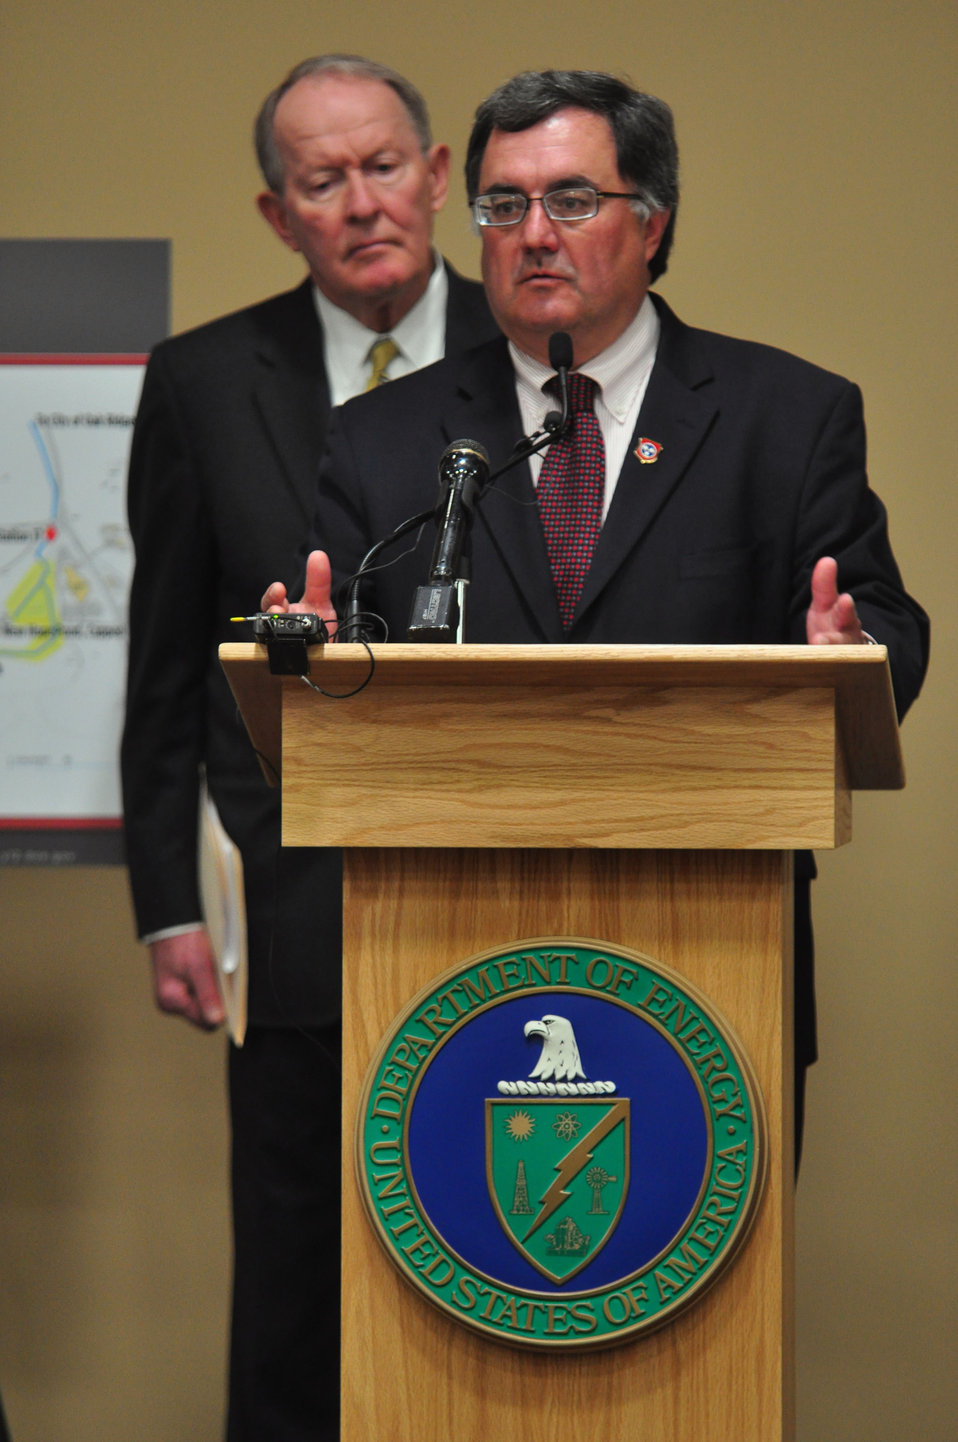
Mercury Cleanup Press Conference Y-12 Oak Ridge Speaking Robert Martineau Tennessee Department of Environment and Conservation Commissioner with U.S. Sen. Lamar Alexander (R-Tenn.) looking on

13-051 DOE photo Lynn Freeny 5-3-2013 Oak Ridge Tennessee